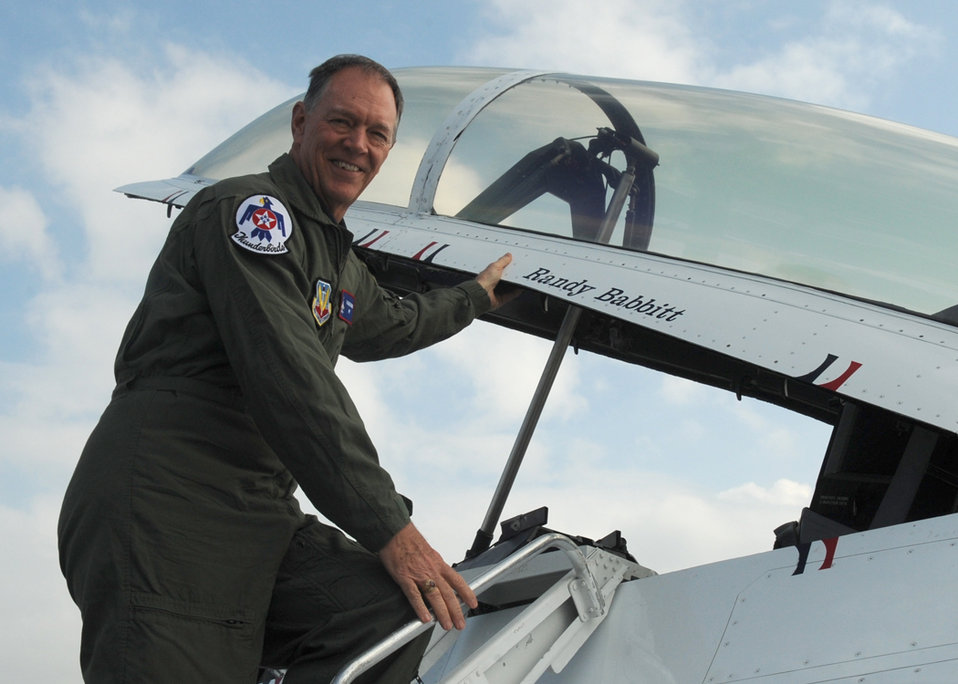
Flying with the Thunderbirds

During his visit with the U. S. Air Force Thunderbirds April 15, 2010, at Nellis Air Force Base, Nev., Randy Babbitt, the administrator of the Federal Aviation Administration, received a familiarization flight with the demonstration team.